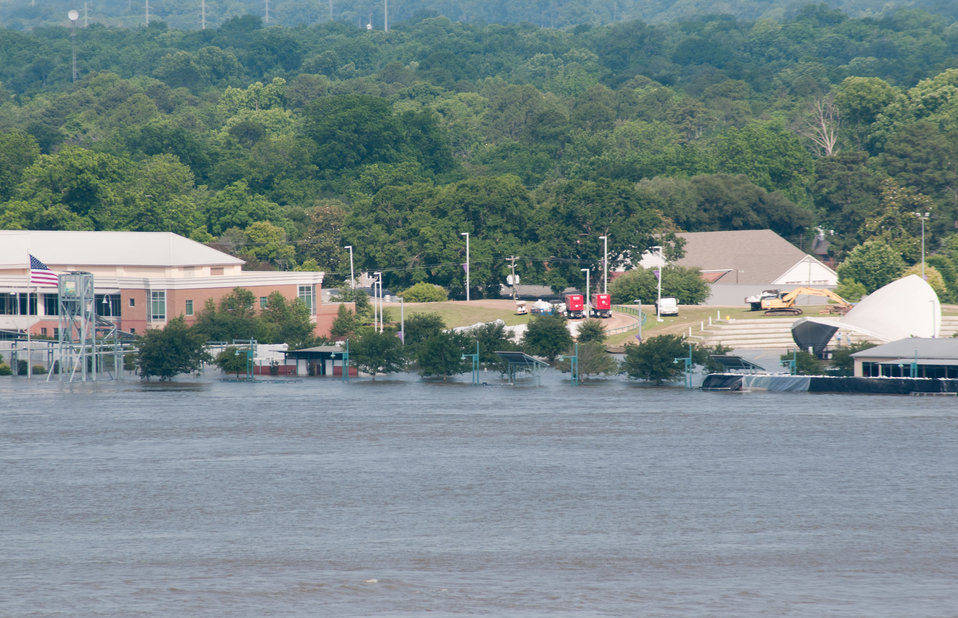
Vidalia, MS riverfront reaches historic flood levels near the Natchez–Vidalia Bridge which connects Natchez, Mississippi and Vidalia, Louisiana, on Thursday, May 19, 2011.